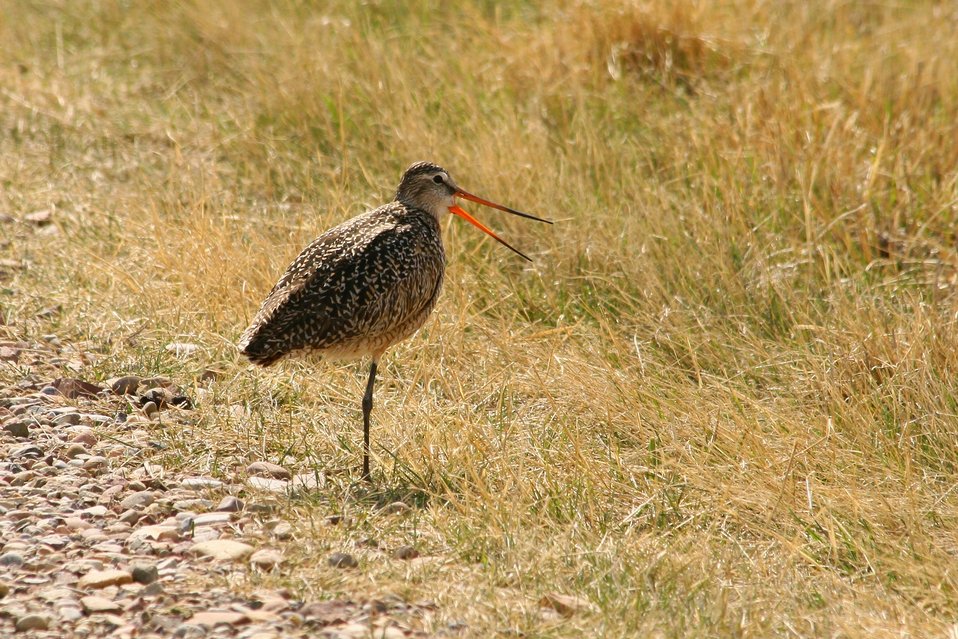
Marbled Godwit

The lands of the refuge were established to protect and provide habitat for migratory birds that cross State lines and international borders and are by law a Federal trust responsibility.

The refuge is of great value to waterfowl and shorebirds, as well as other migrating water-dependent bird species, because of the diversity of wetland and upland habitats that provide for the diverse life cycle needs of these species.